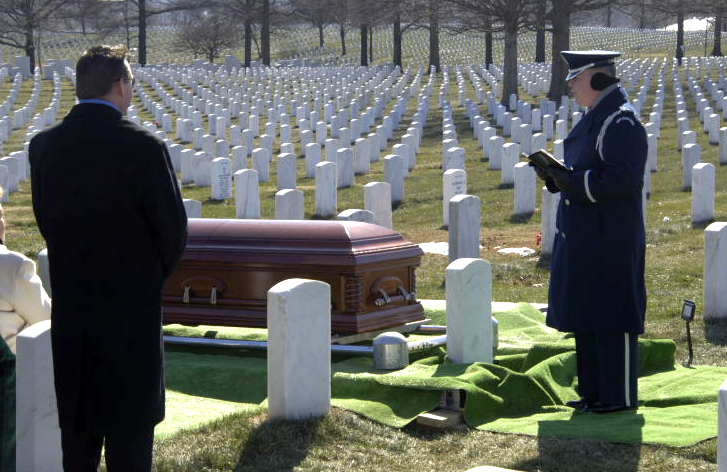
Chaplains provide honored service

Chaplain (Capt.) Kenneth Fisher is one of three Air Force chaplains assigned to Arlington National Cemetery to preside over funerals for Air Force members to be buried there. Each of the services has chaplains assigned and collectively, they conduct an average of 27 funerals a day.